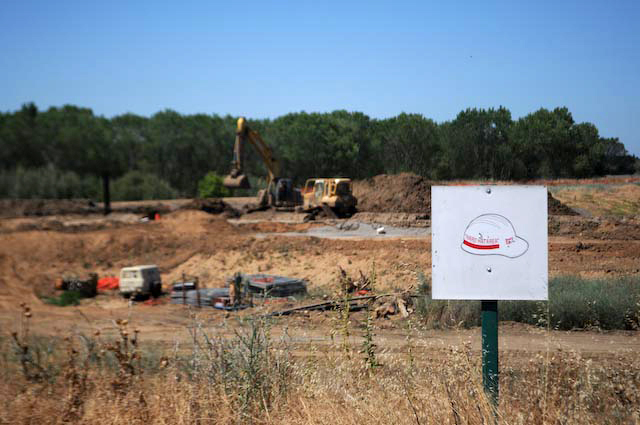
Corps digging deep to reduce West Sacramento flood risk

An excavator and bulldozer work in the distance to install a seepage cutoff wall more than 75 feet deep down the center of a setback levee June 19, 2012, in West Sacramento, Calif. The U.S. Army Corps of Engineers and the Central Valley Flood Protection Board are working together to strengthen levees along the Sacramento River and its tributaries, as part of the Sacramento River Bank Protection Project.